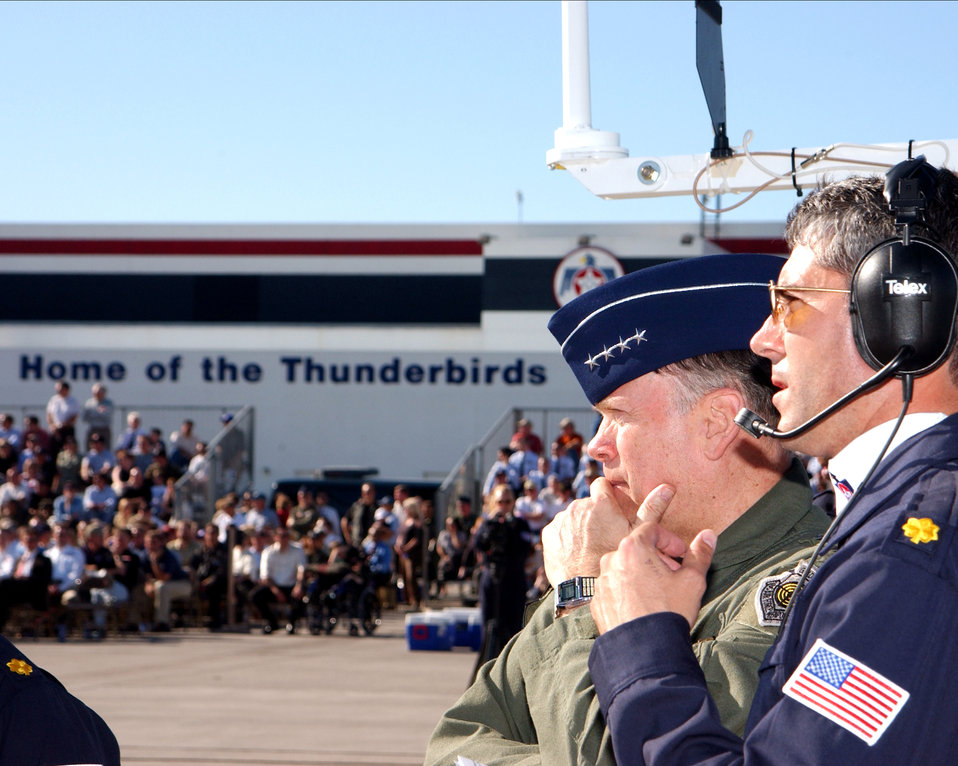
Thunderbirds cleared to launch

NELLIS AIR FORCE BASE, Nev. -- Air Force Chief of Staff Gen. John P. Jumper reviews an approval show for the Air Force Thunderbirds. Maj. Jeremy Sloan maintains contact with the team from a communications trailer during the demonstration. After the show General Jumper gave his approval to begin the 2005 show season. Major Sloan is the operations officer for the Thunderbirds.